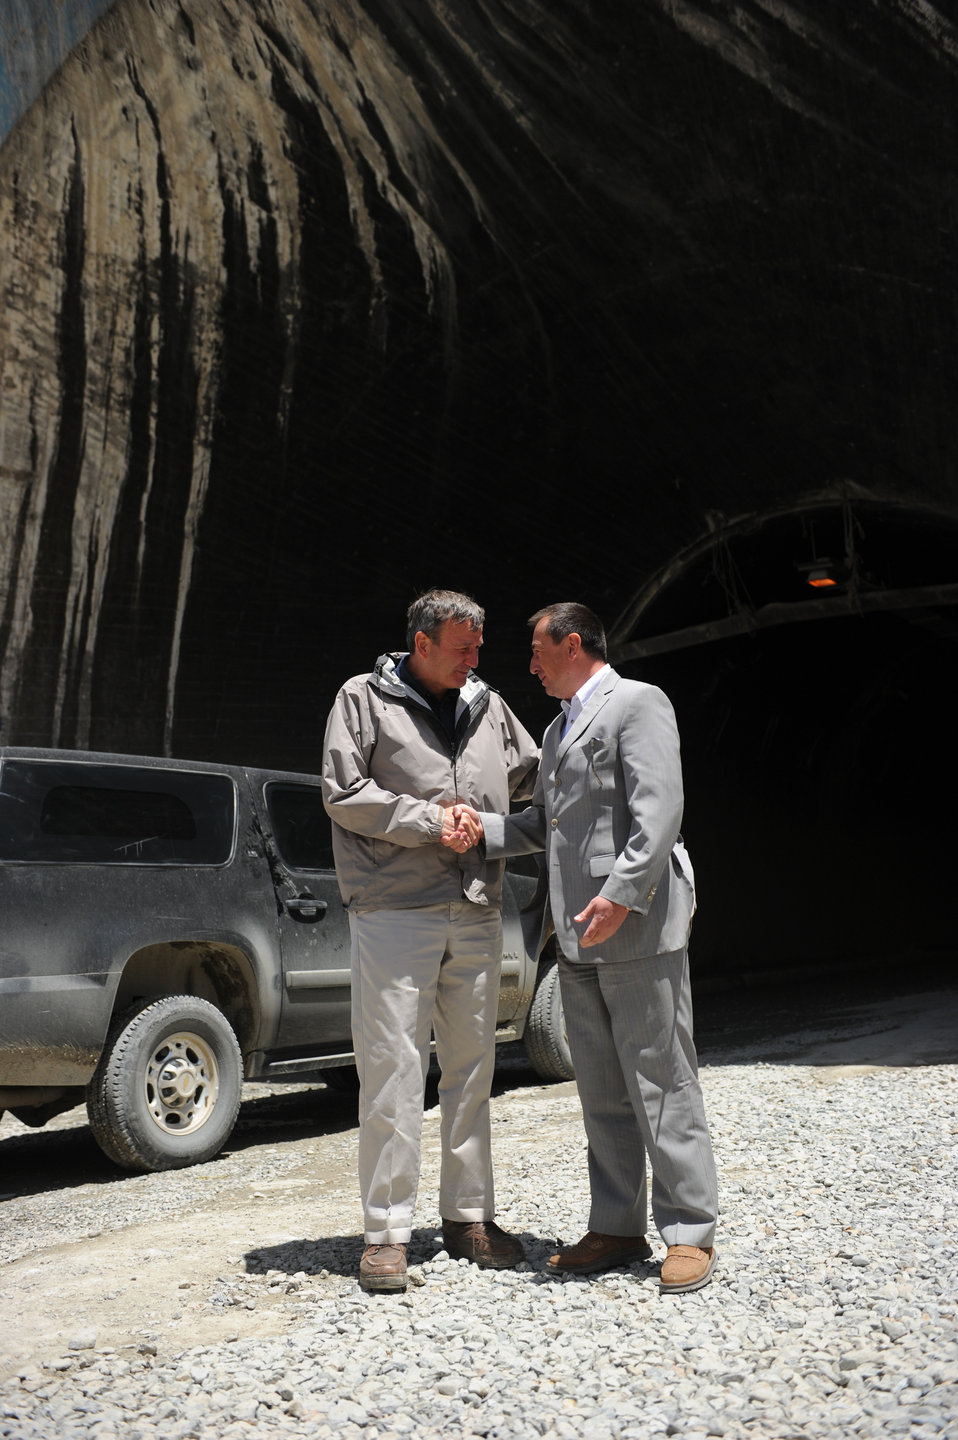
Russian Ambassador Andrey Avetisyan and U.S. Ambassador Karl W. Eikenberry attend a ceremony to mark the beginning of renovations at the Salang Tunnel on the border of Parwan and Baghlan Provinces, Afghanistan, on Wednesday, June 15, 2011. (S.K.Vemmer/Department of State)